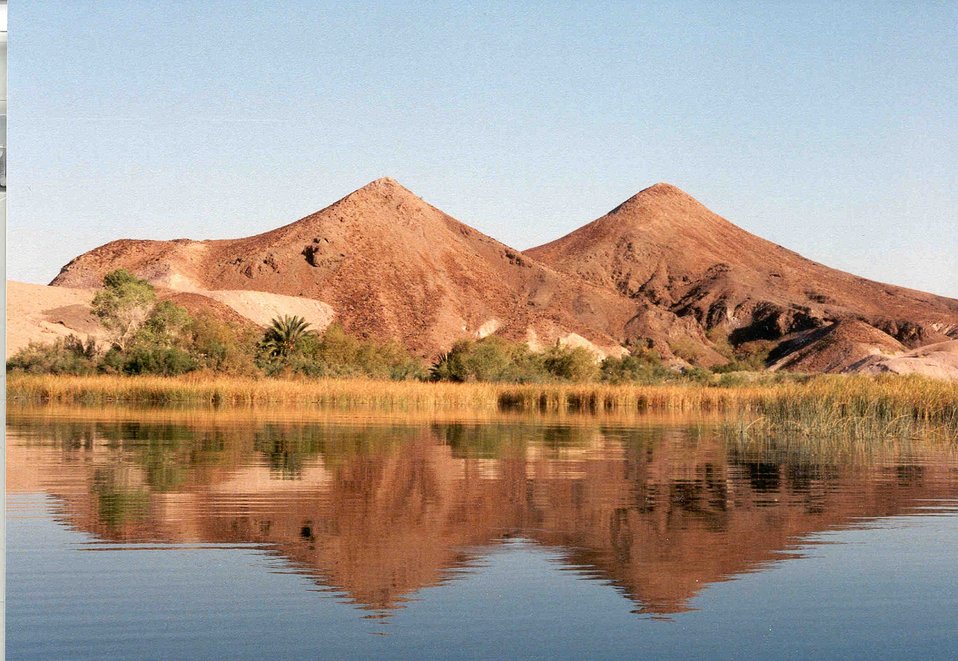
This mirror image reflection is what you might encounter on a quiet morning in the back waters of Squaw Lake.